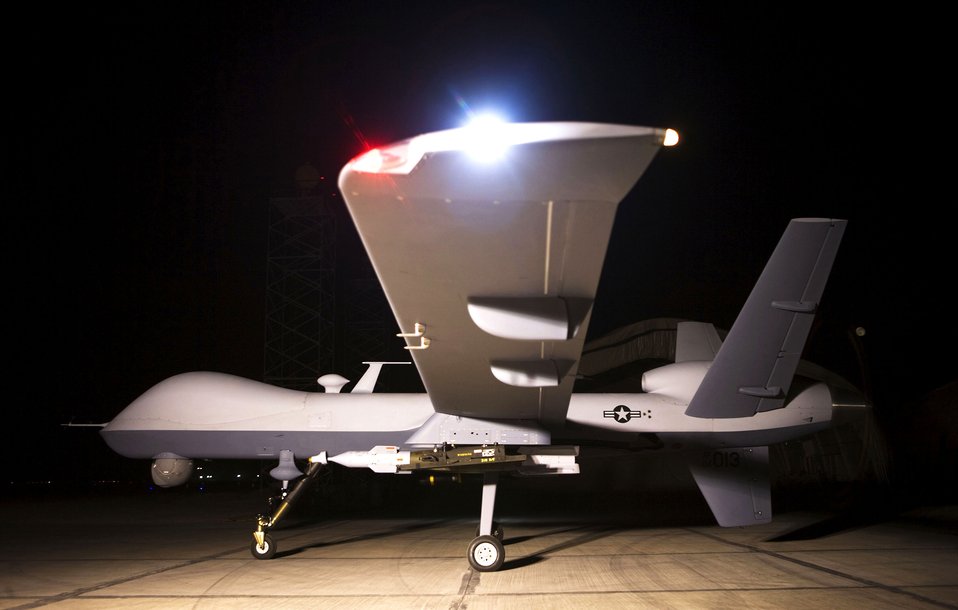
May 15 airpower summary: Reaper strikes enemy

An MQ-9 Reaper sits on a ramp in Afghanistan. Larger and more powerful than the MQ-1 Predator, the Reaper is designed to go after time-sensitive targets with persistence and precision, and destroy or disable those targets